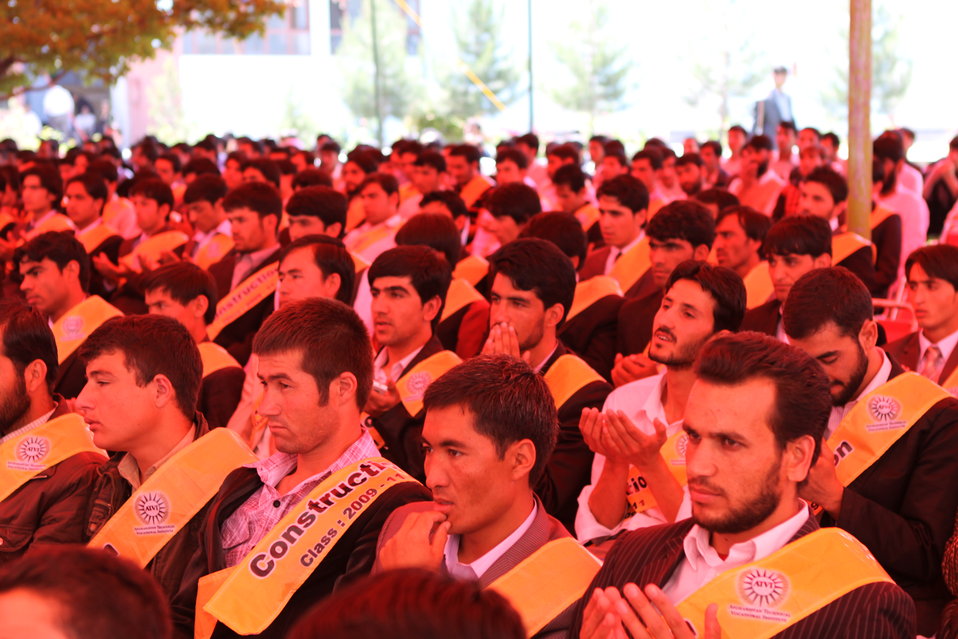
100522 ATVI Graduation 043